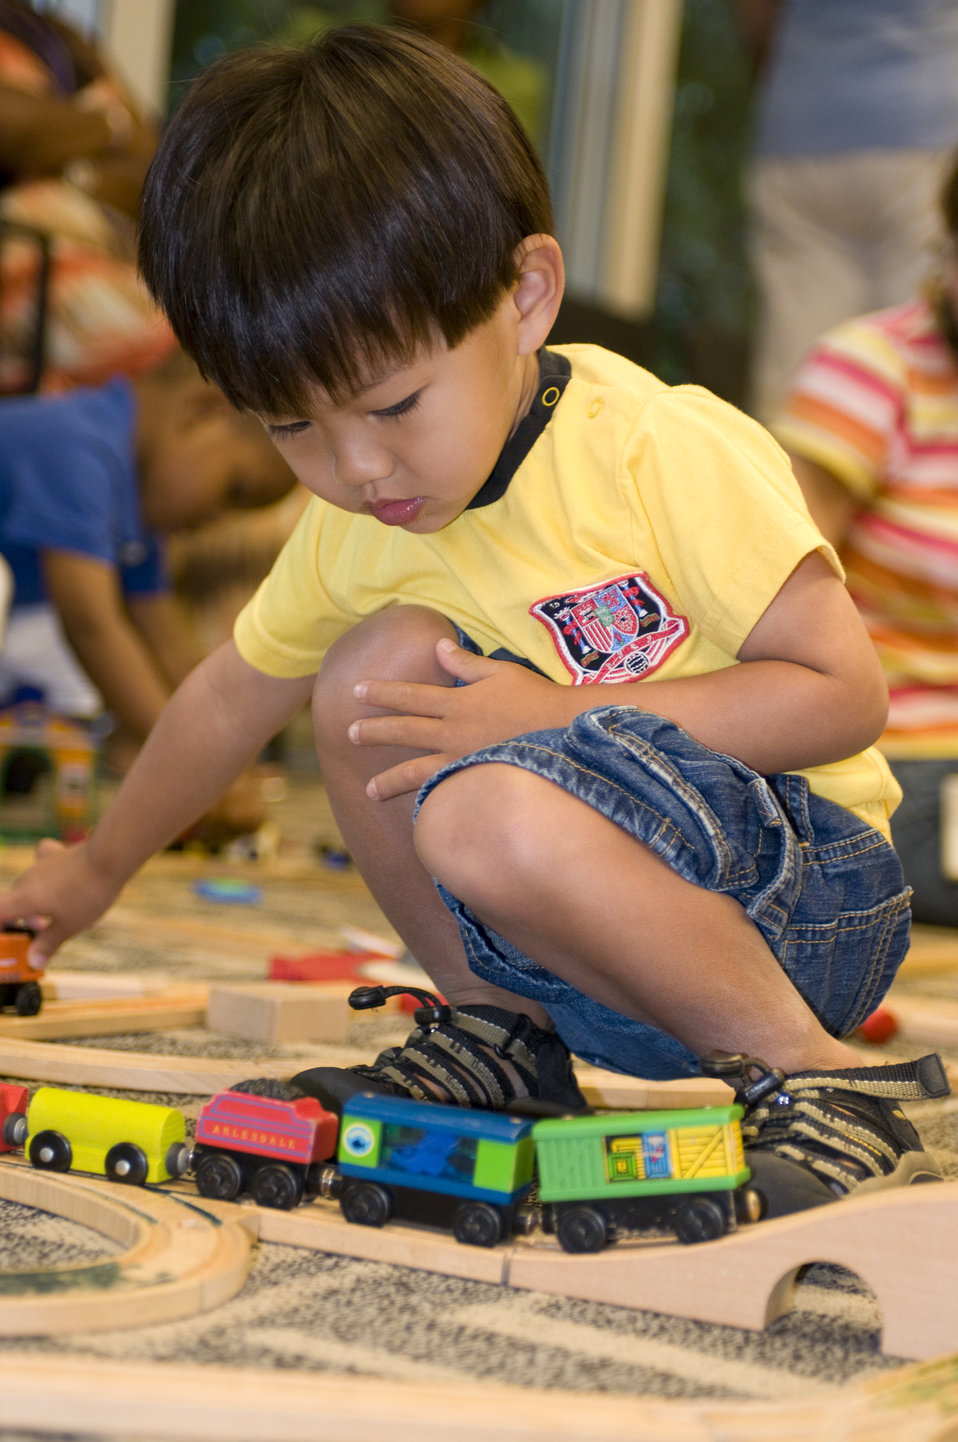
While in a daycare setting, this young boy was playing with a small wooden train set, pushing the little train cars along the grooved wooden track.